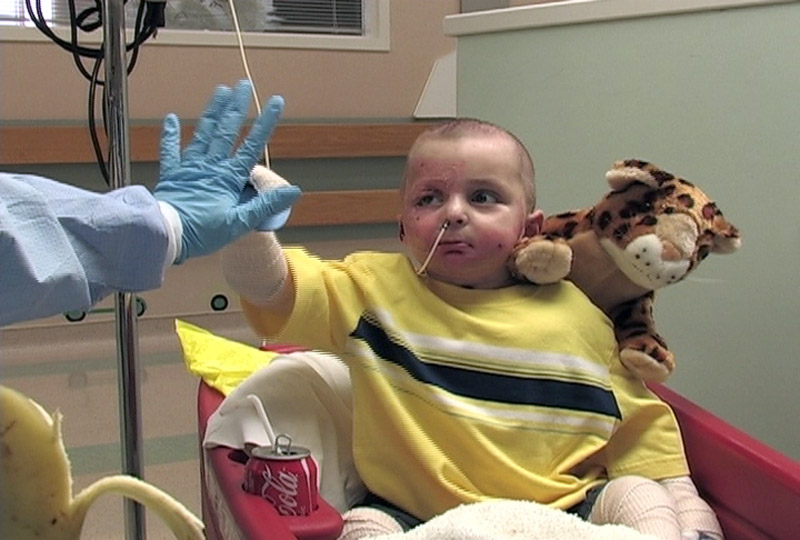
Young Iraqi burn victim progressing well

Al Amreeki gives a high five to his interpreter, Nadia Shaya, April 10 at Shriners Hospital in Cincinnati. The 3-year-old left Balad Air Base, Iraq, with more than 45 percent of his body burned from a stove fire at his home and Airmen and medics have helped nurse him back to health.